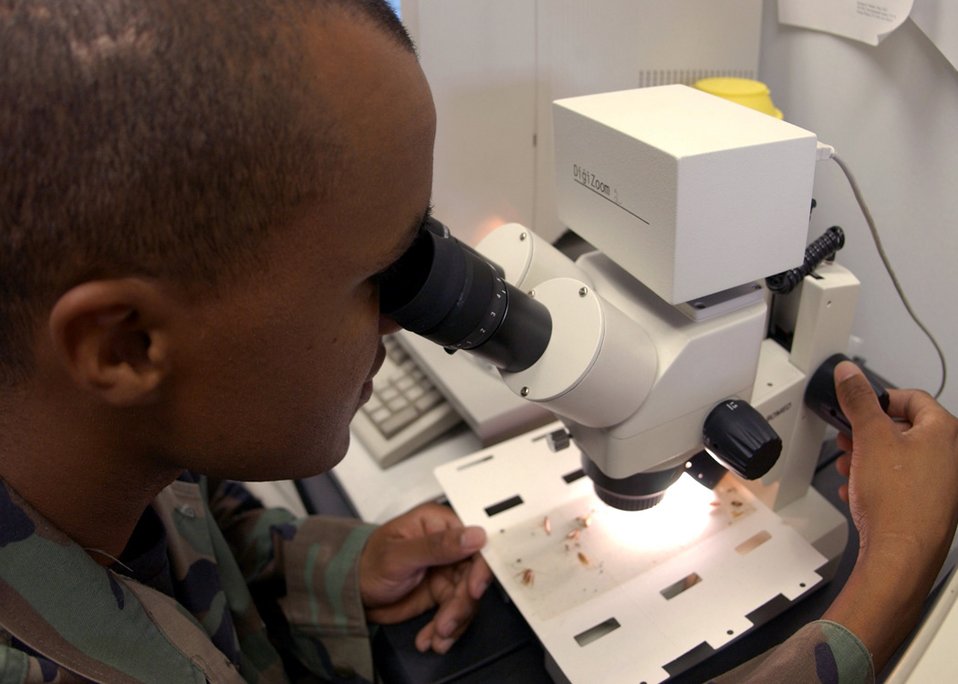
Bugging out

EIELSON AIR FORCE BASE, Alaska -- Staff Sgt. Christopher Beach inspects insects here June 28. The 354th Civil Engineer Squadron pest management section's Airmen use biological, mechanical and cultural methods to deter and catch pests around base.